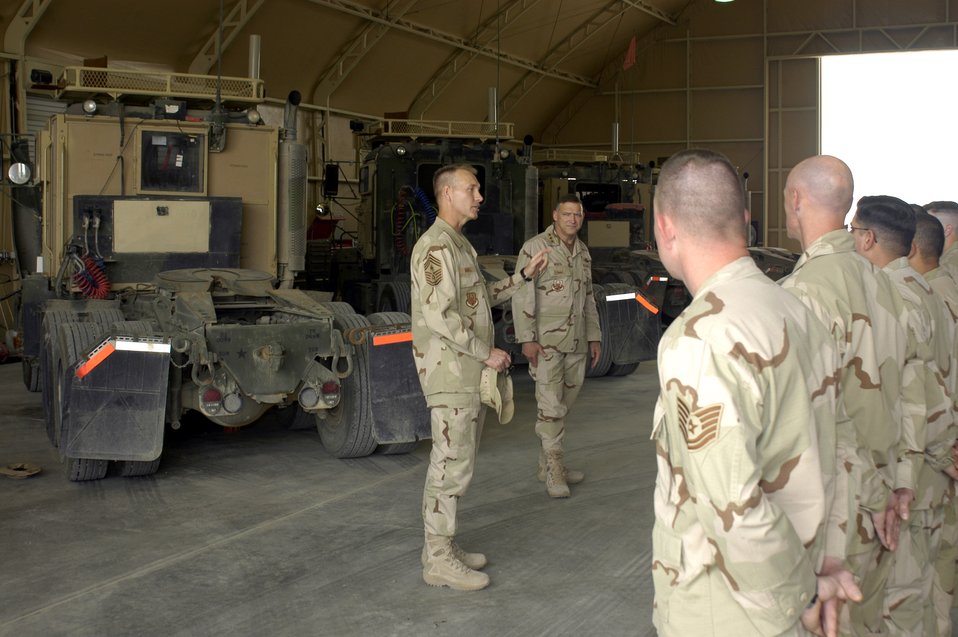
CENTAF leaders visit Airmen at nontraditional places

Chief Master Sgt. Richard Small and Lt. Gen. Gary L. North address members of the 586th Expeditionary Mission Support Group April 20 at Camp Arifjan. The 586th is one of the many units in the U.S. Central Command Air Forces area of responsibility where Airmen are doing nontraditional jobs supporting the war on terrorism. General North is the CENTAF commander, and Chief Small is the CENTAF command chief.